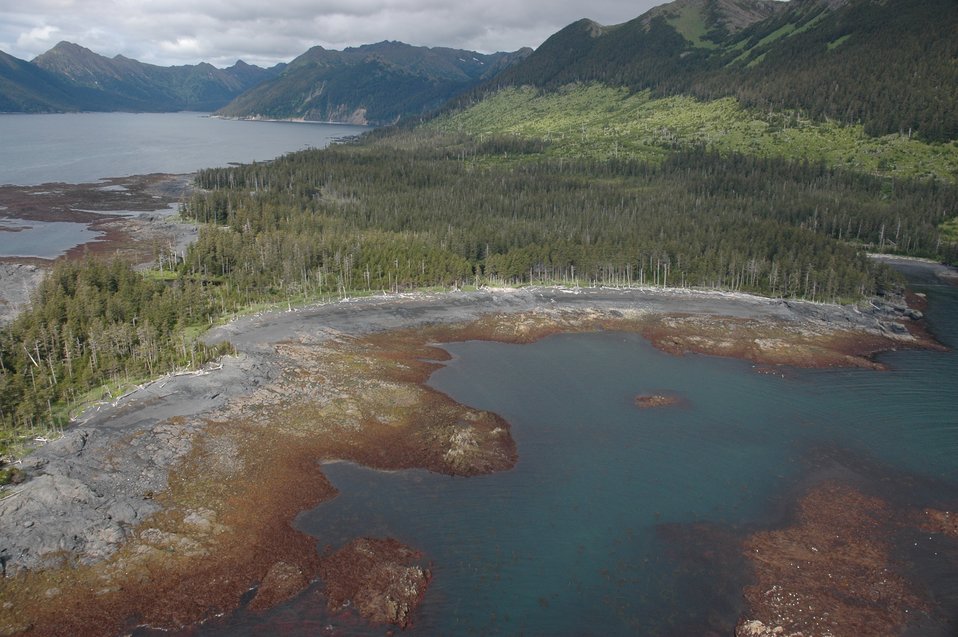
Aerial photograph. Low tide in Chugach Bay showing red and green algae covered rocks with driftwood littering the high tide line.